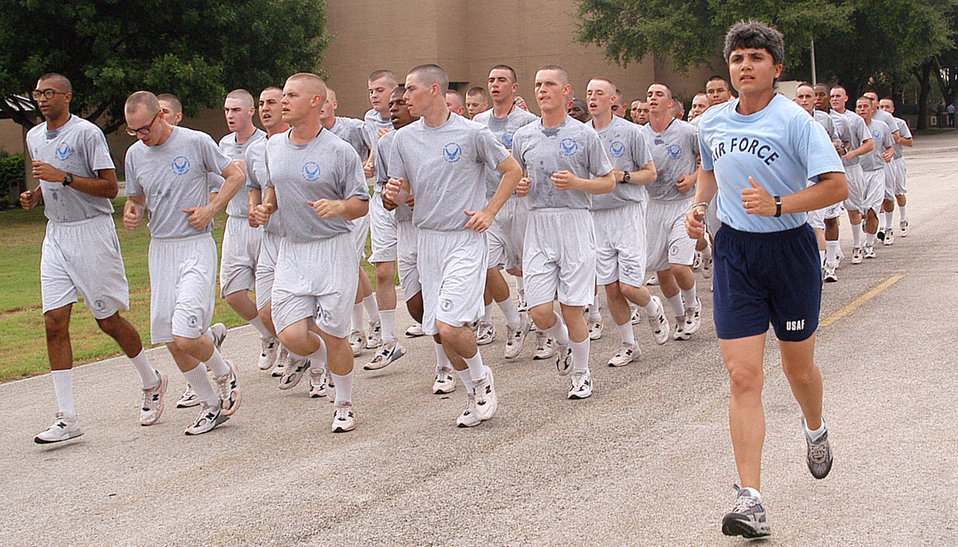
Basic running

LACKLAND AIR FORCE BASE, Texas -- Tech. Sgt. Jacqueline Barfield runs with a flight of basic trainees. Barfield is a military training instructor with the 322nd Training Squadron here.